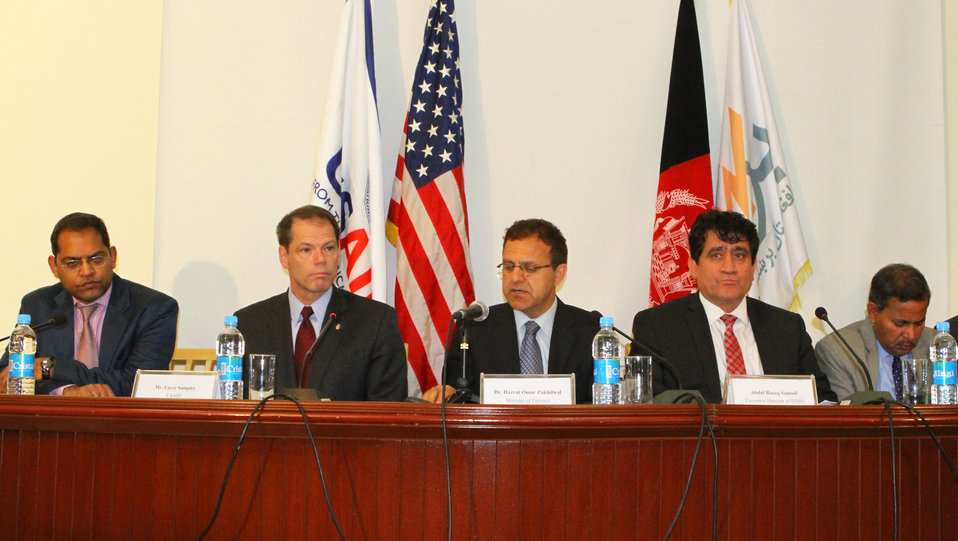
DABS to Extend Power Grid to Southern Afghanistan